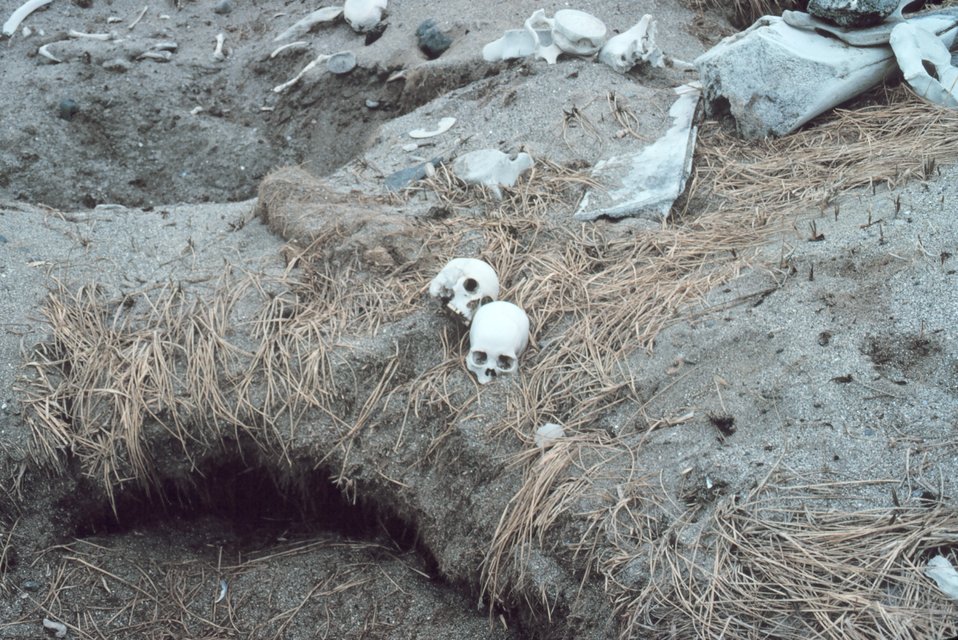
Currents carry many dead things to Punuk Island making it the graveyard of the Bering Sea.